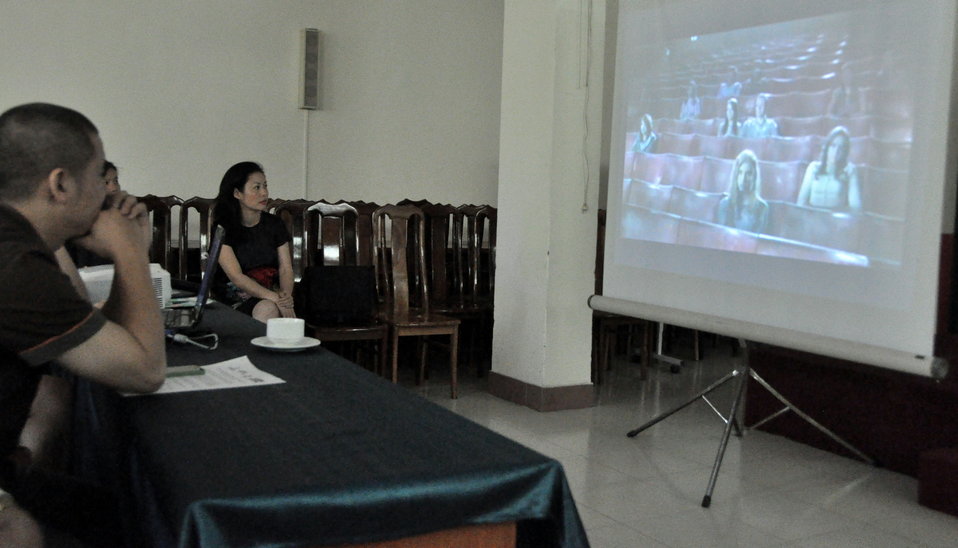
USAID supports scriptwriting contest for students in Hanoi to boost intellectual property rights awareness

Make a caption!